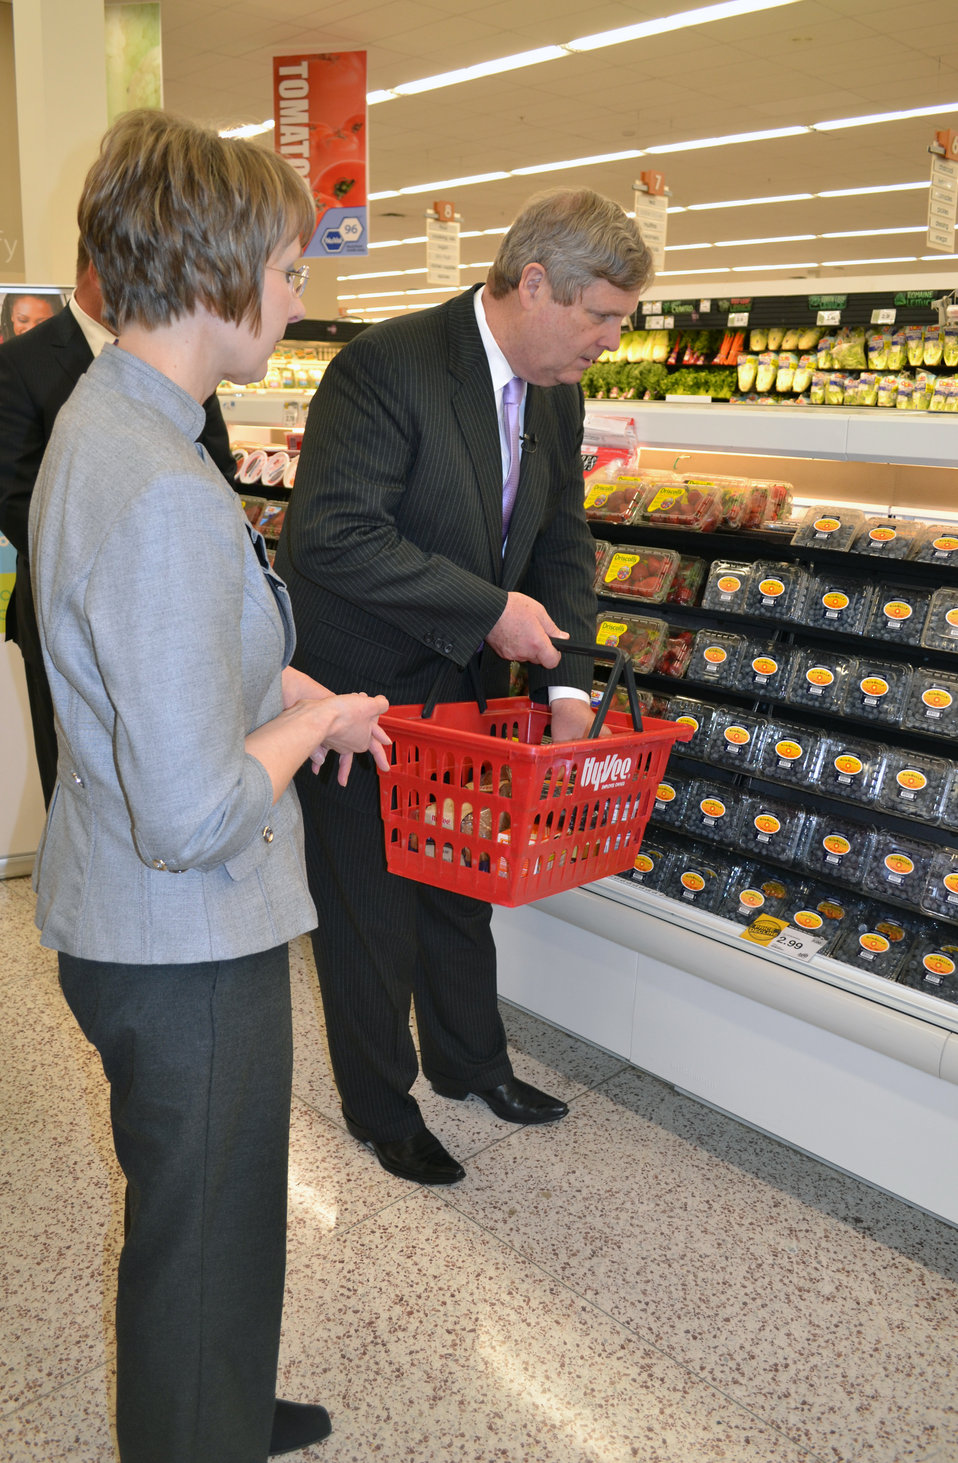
Agriculture Secretary Tom Vilsack visited a Hy-Vee grocery store in Sioux Falls, South Dakota to discuss USDA efforts to promote fruit and vegetable consumption, improve childhood nutrition and prevent obesity to raise a healthier generation of Americans. He announced the results of a pilot program aimed at increasing fruit and vegetable consumption in America’s poorest schools.